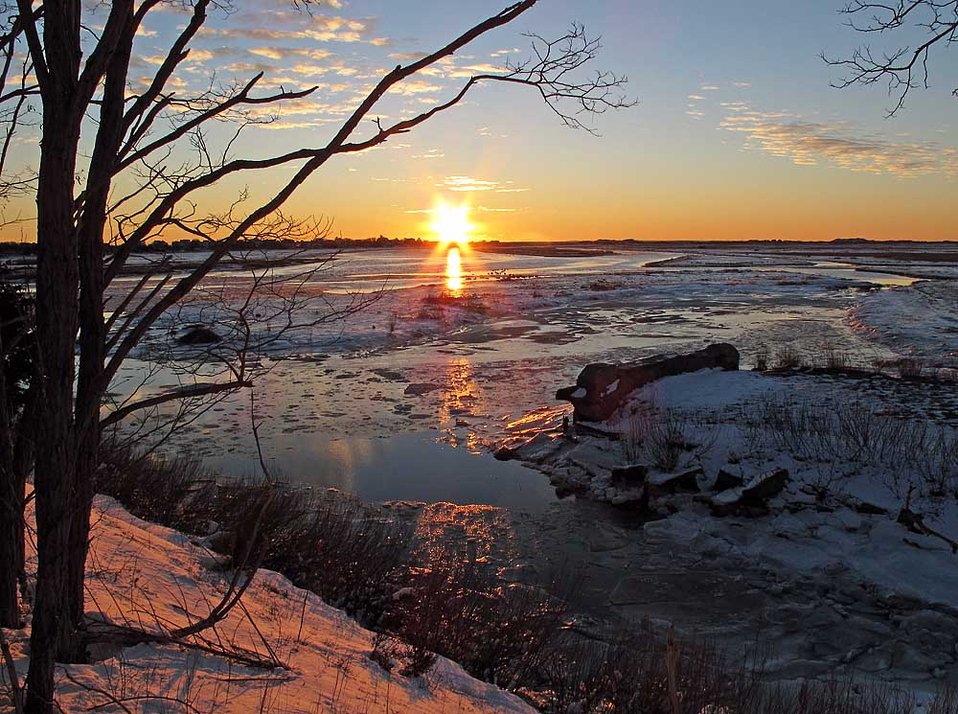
Photo of the Week - Sunrise at Parker River National Wildlife Refuge, MA

Photo of the Week - 12/28/10

Sunrise over Plum Island at Parker River National Wildlife Refuge in Newburyport, Massachusetts.